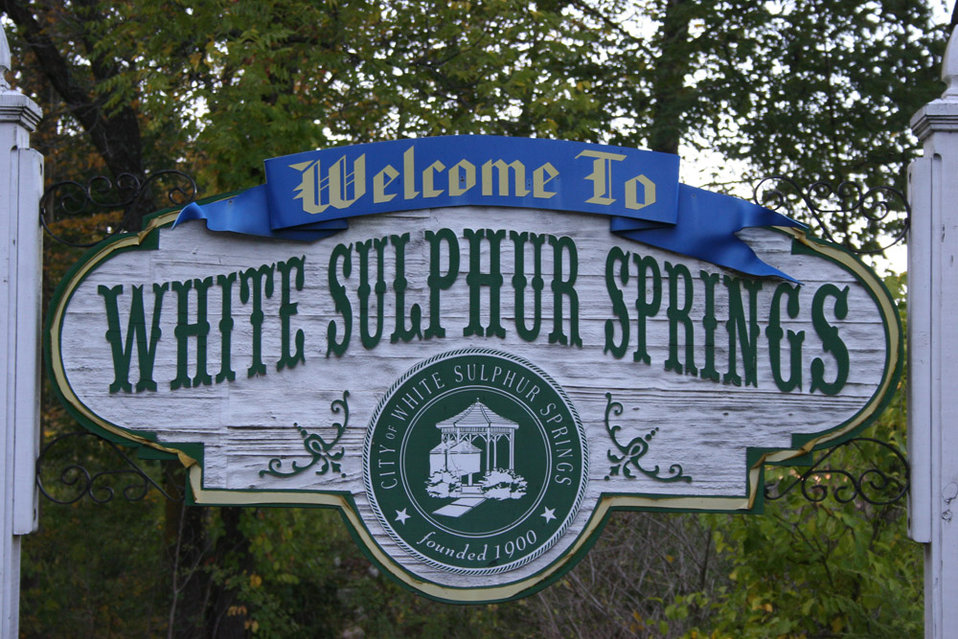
Freshwater Folk Festival

The 5th Annual Freshwater Folk Festival at White Sulphur Springs National Fish Hatchery in West Virginia.Credit: USFWS